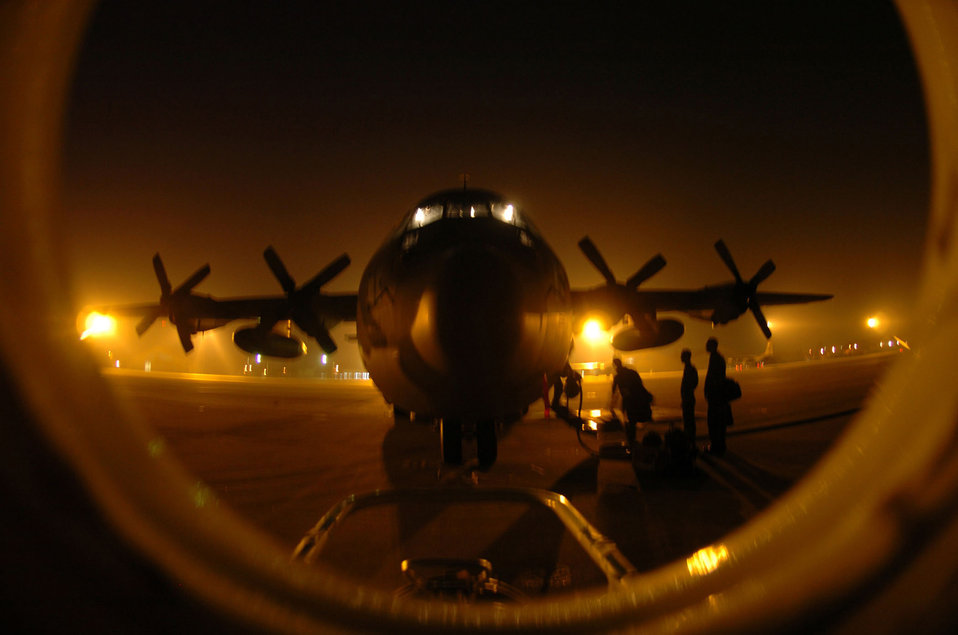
Keen Sword 2005

YOKOTA AIR BASE, Japan -- A C-130 Hercules from the 36th Airlift Squadron here prepares to conduct a cargo air drop mission during exercise Keen Sword 2005 Nov. 11.